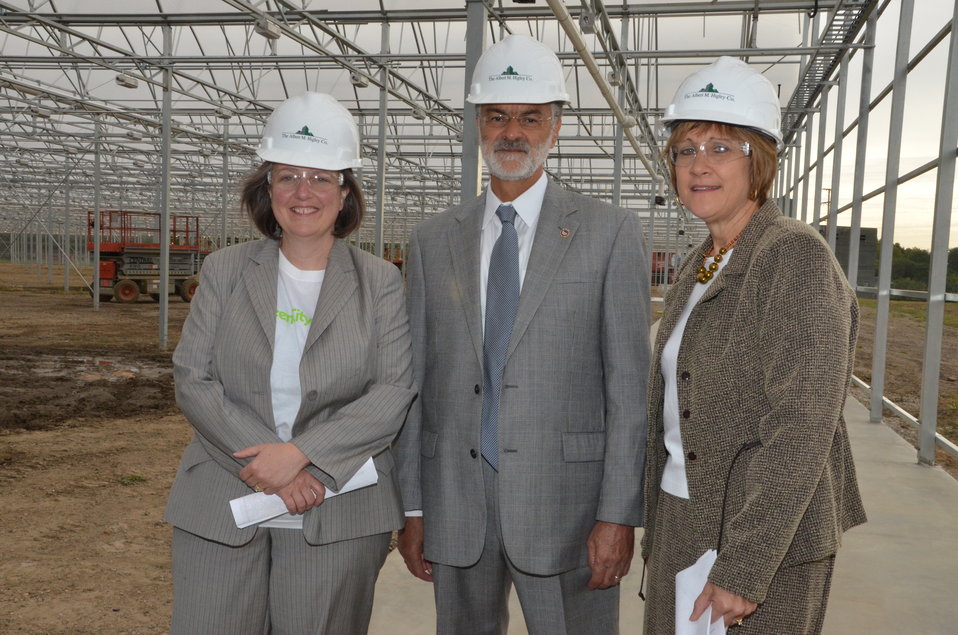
L to R, U.S. Agriculture Deputy Secretary Kathleen Merrigan, Cleveland, Ohio Mayor Frank Jackson and Deb Berger, Natural Resources Conservation Service Assistant State Conservationist toured Cleveland's Green City Growers Cooperative's greenhouse which is scheduled to open November, 2012.